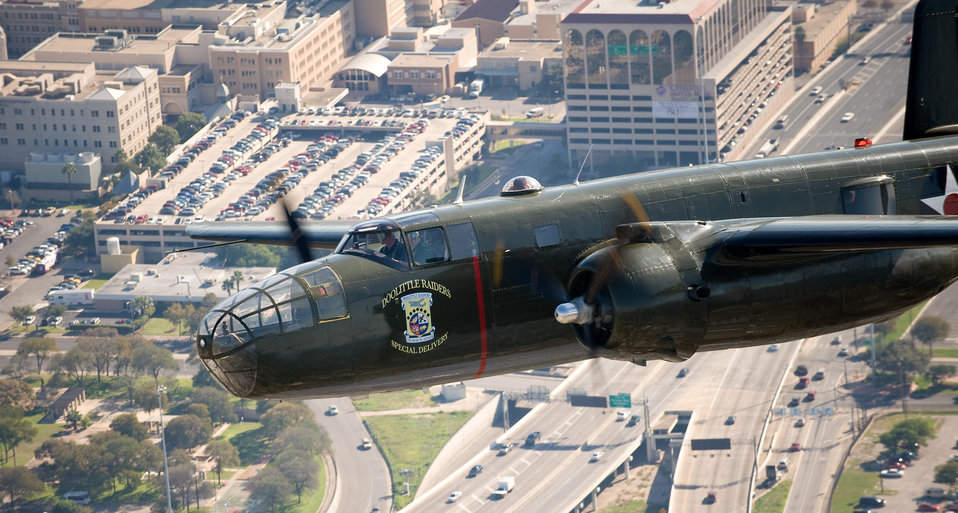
Warrior Flight